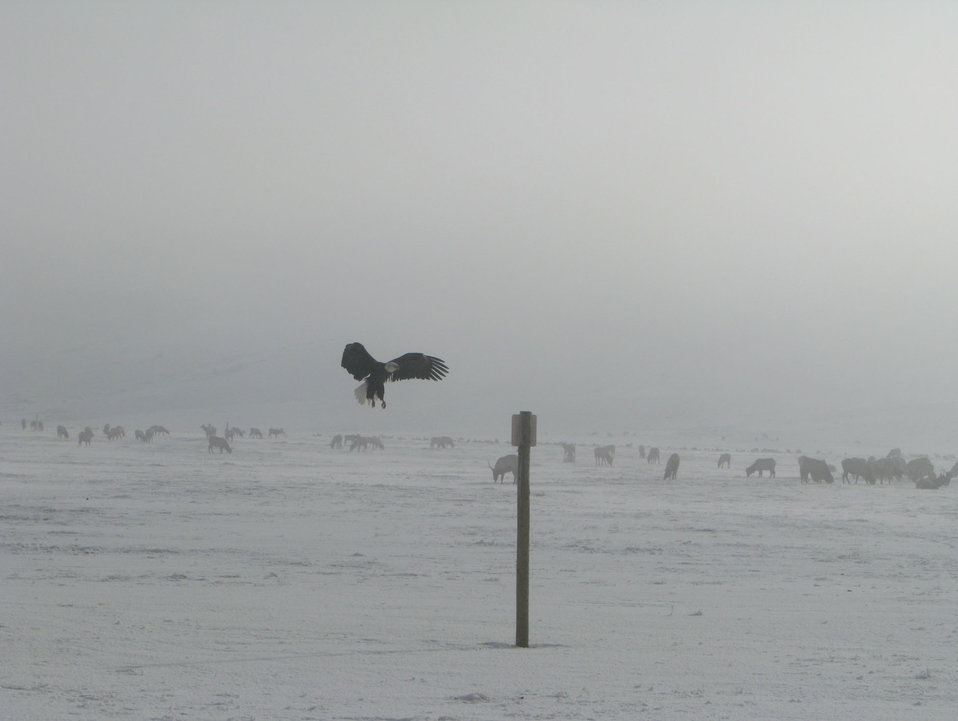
The Eagle Has Landed . . . Almost

A bald eagle prepares to land on a post where it will have a good vantage point of its wintry surroundings.